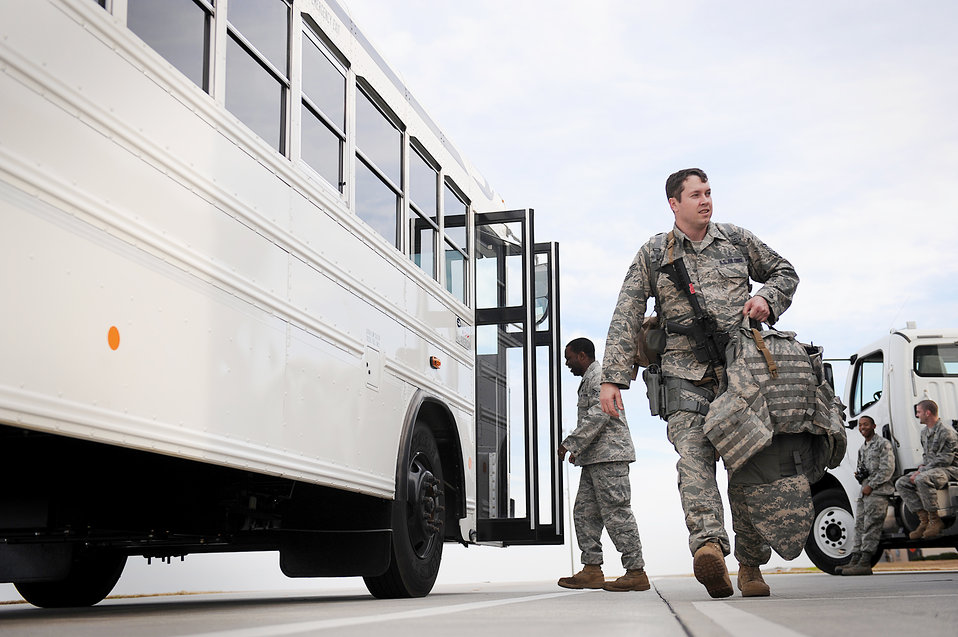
823rd SFS to depart in support of Haiti relief efforts

An 823rd Security Forces Squadron Airman carries his gear as he walks toward the rest of his squadron for an accountability check Jan. 20, 2010 at Moody Air Force Base, Ga. The 823rd SFS has been tasked to deploy in support of Haiti relief efforts.